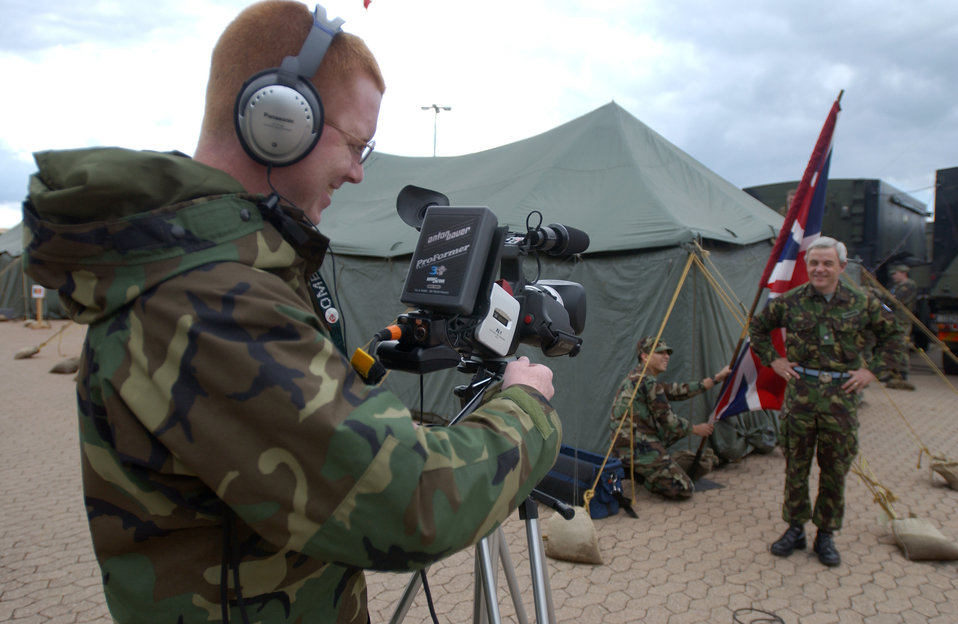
Smile for the camera

LAGER AULENBACH, Germany (AFPN) -- Senior Airman George T. Wolfe VII films British Maj. Peter Barron during Combined Endeavor '03 here. The exercise is designed to identify and document command, control, communications and computer interoperability between NATO and Partnership for Peace nations. Representatives from 38 countries and NATO are taking part in the exercise May 8 to 22. Wolfe is a videographer with the 52nd Communications Squadron at Spangdahlem Air Base, Germany.